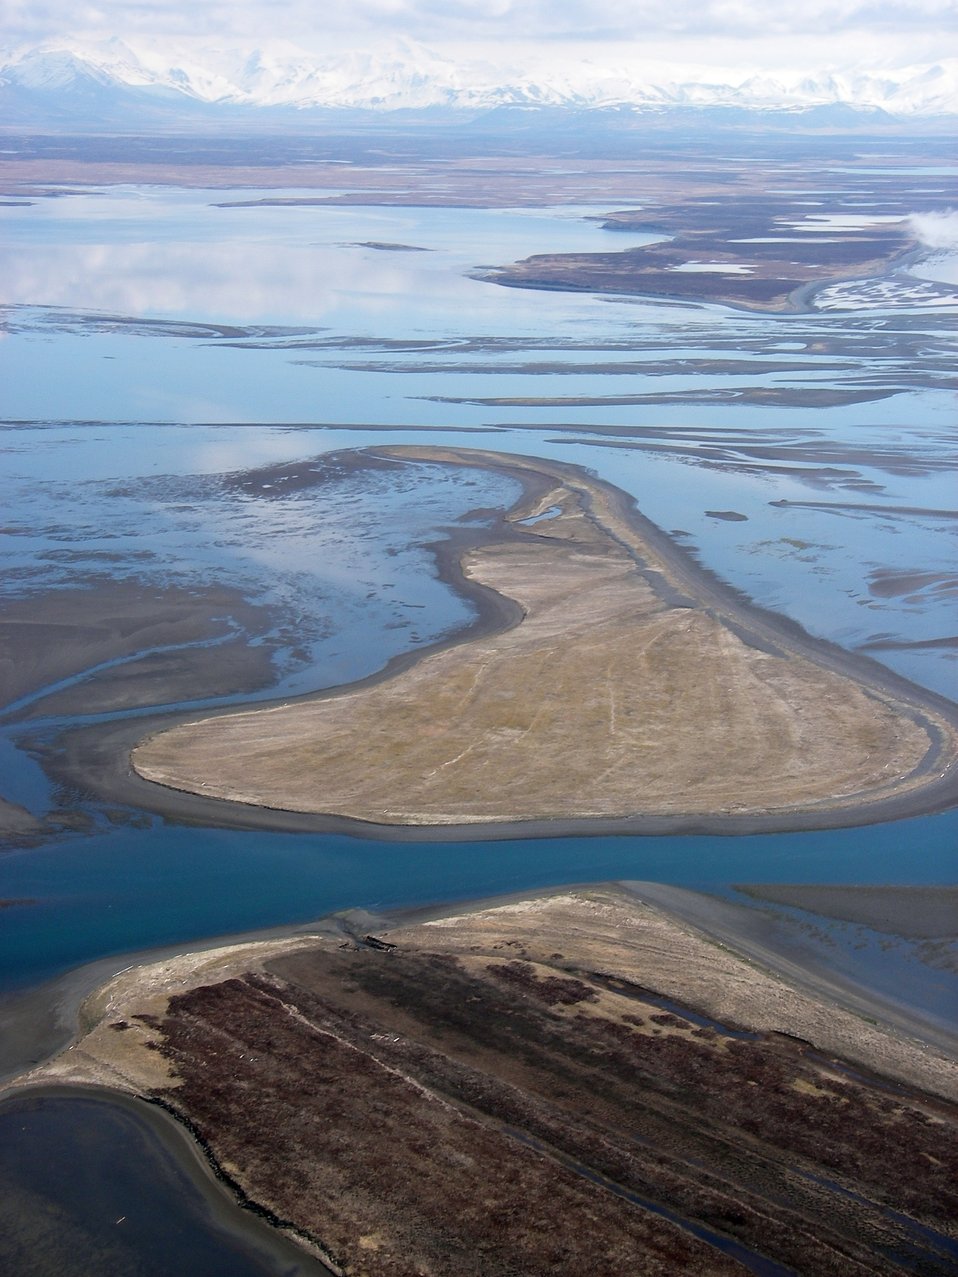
Barrier Islands

Kinzarof Lagoon, Izembek National Wildlife Refuge